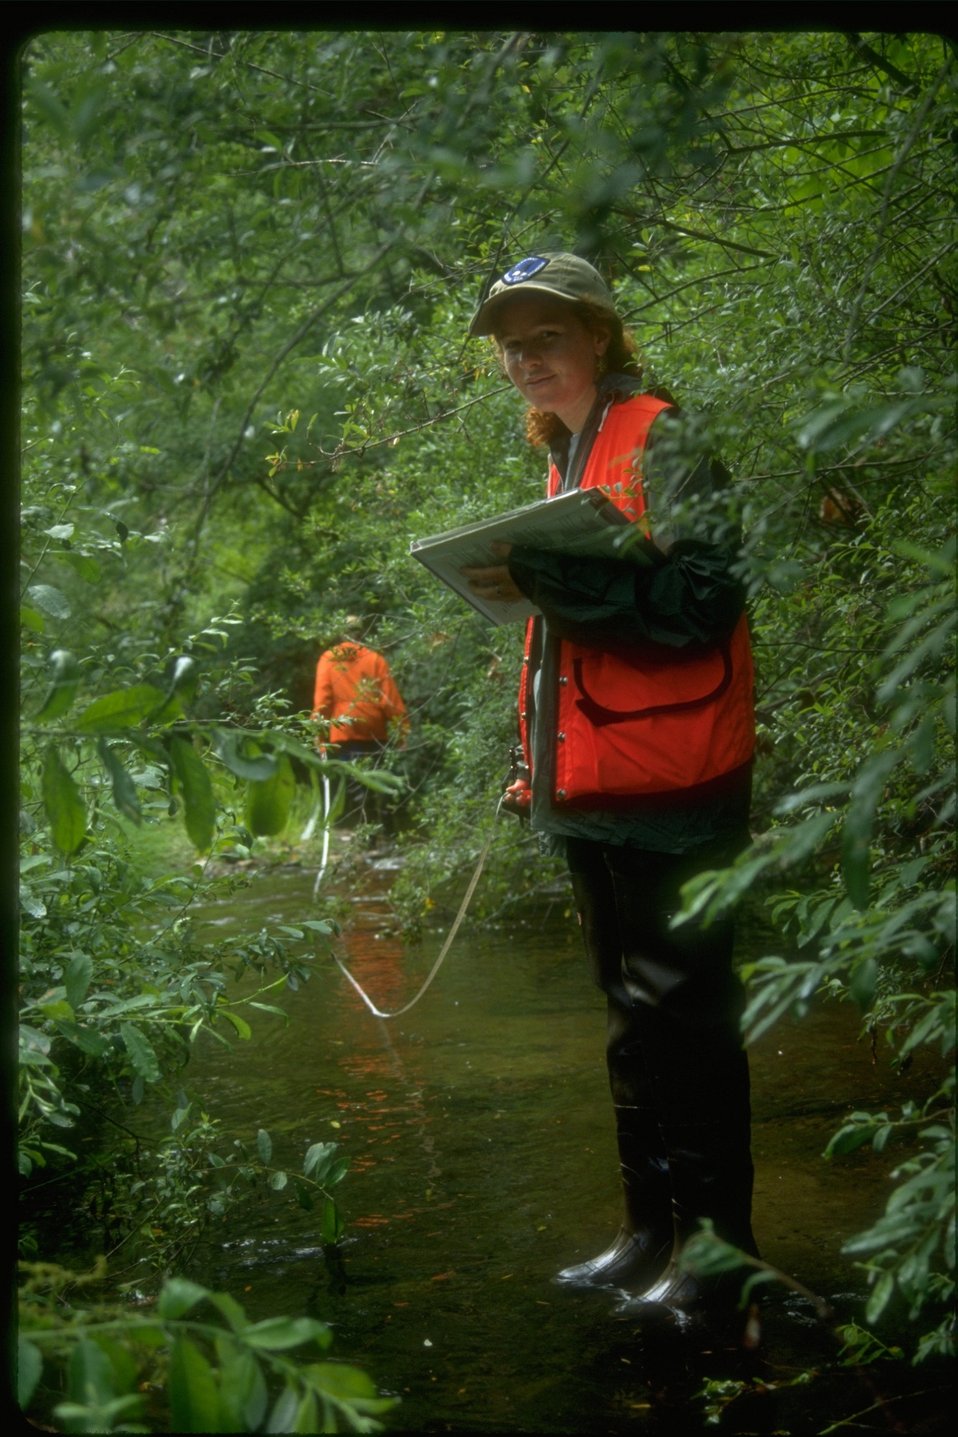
A volunteer from a fishery.